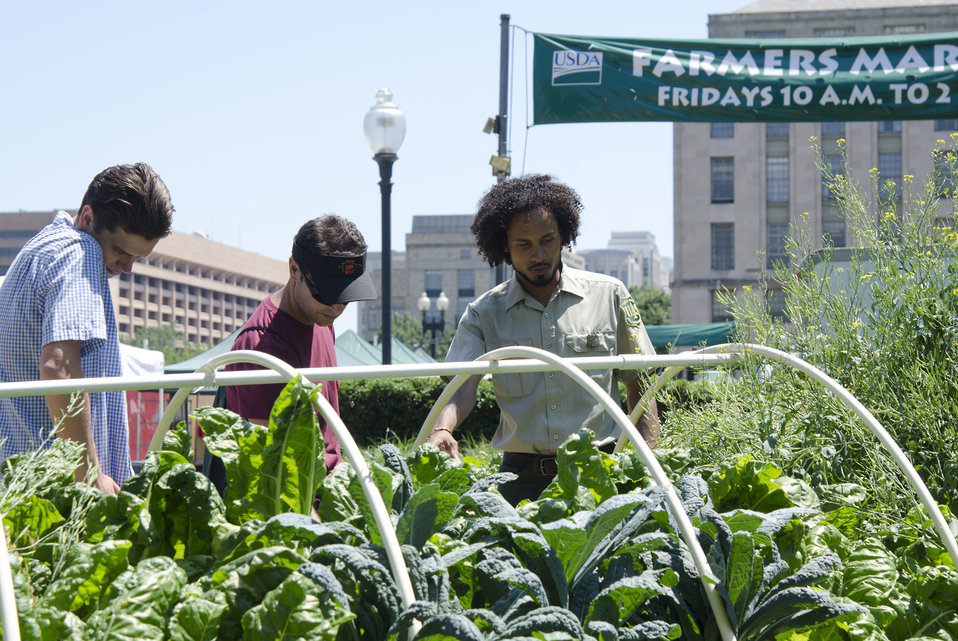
Peoples Garden Pollinator Display at the U.S. Department of Agriculture in Washington, DC, on Friday, June 21, 2013.